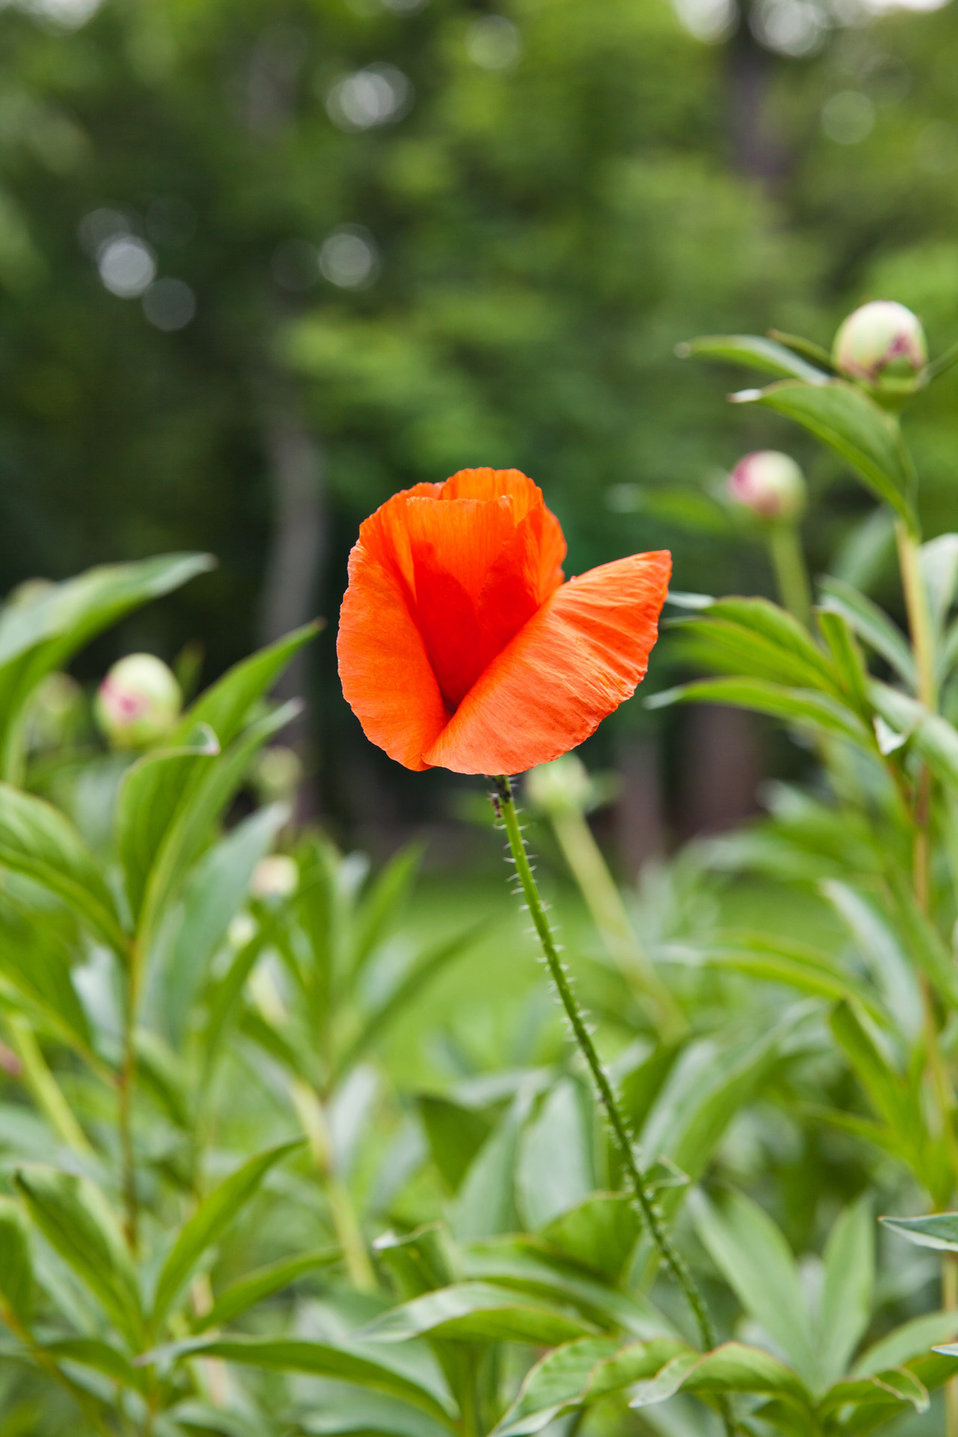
Poppy flower of spring.